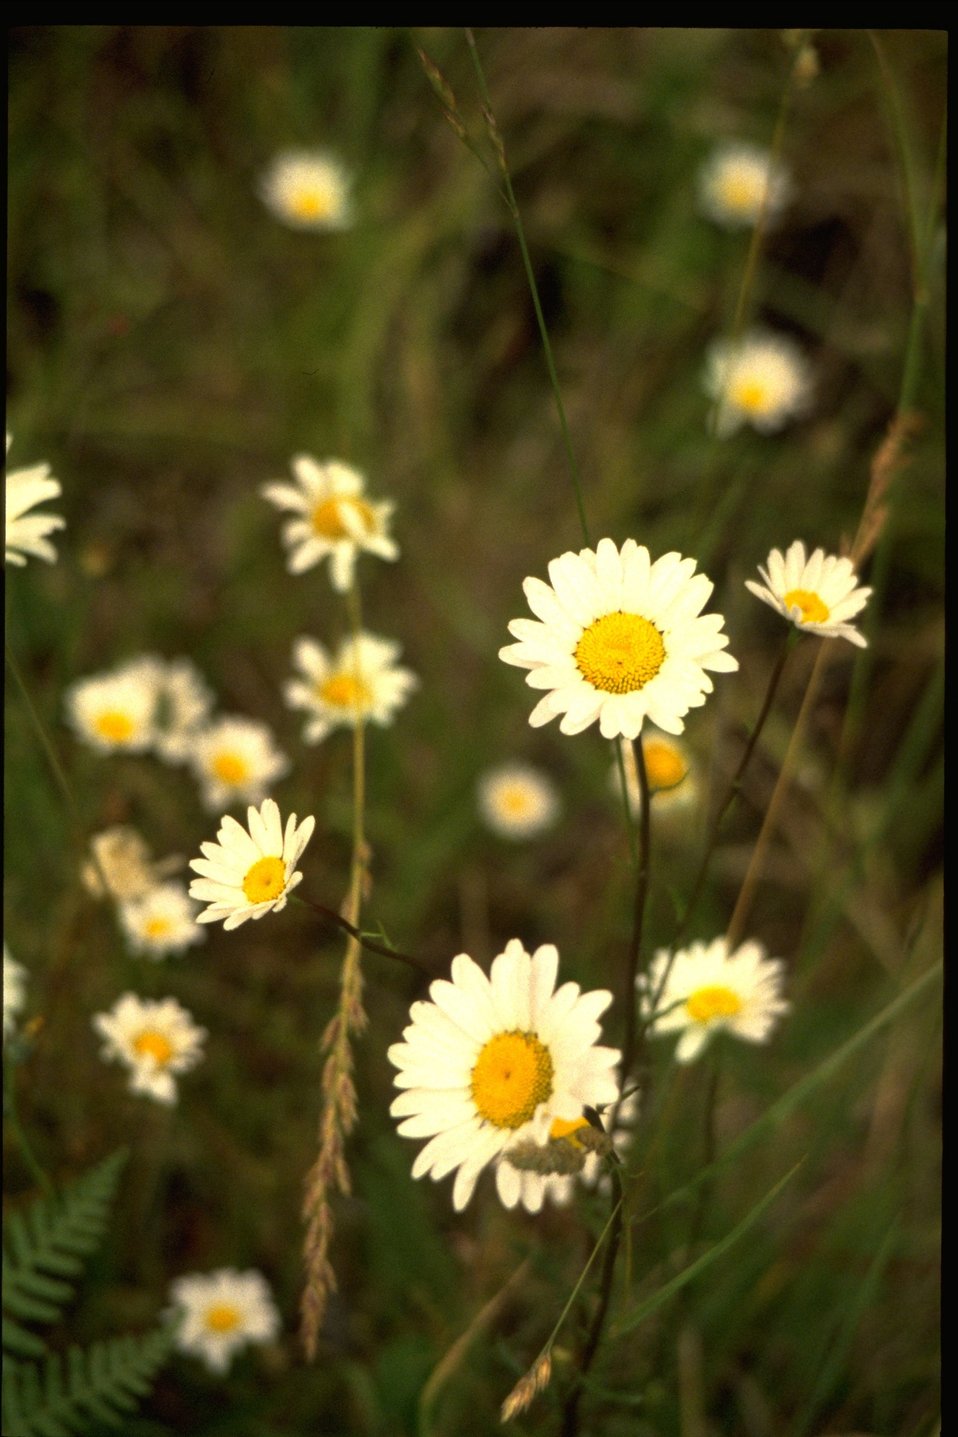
Medium shot of Leucanthemum vulgare.